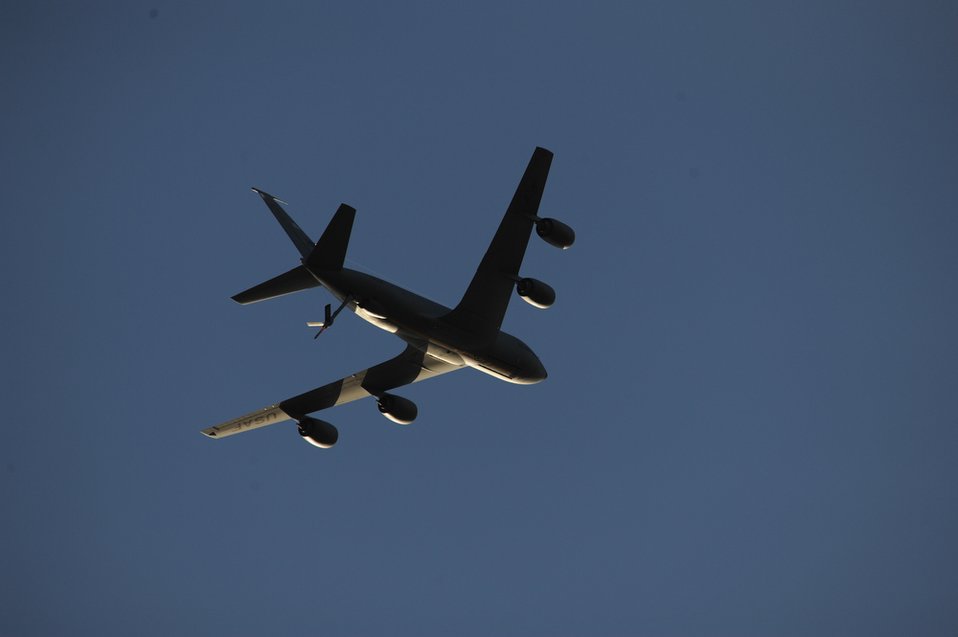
9/11 Ceremony at Joint Base Pearl Harbor-Hickam, Hawaii

A KC-135 Stratotanker flies over while active duty, Guard and Reserve Airmen gathered Sept. 9, 2011, at Joint Base Pearl Harbor-Hickham, Hawaii, to pay tribute to honor those lost on 9/11.